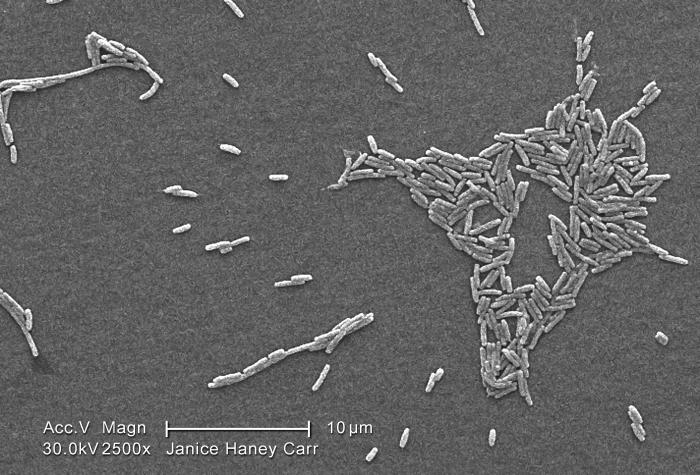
Under a moderately-high magnification of 6500X, this scanning electron micrograph (SEM) depicted a scattered grouping of Gram-negative Legionella pneumophila bacteria. Please see PHIL 11092 through 11152 for additional SEMs of these organisms, specifically PHIL 11118 for a colorized version of this image. In some of these views you'll note the presence of flagellar appendages.